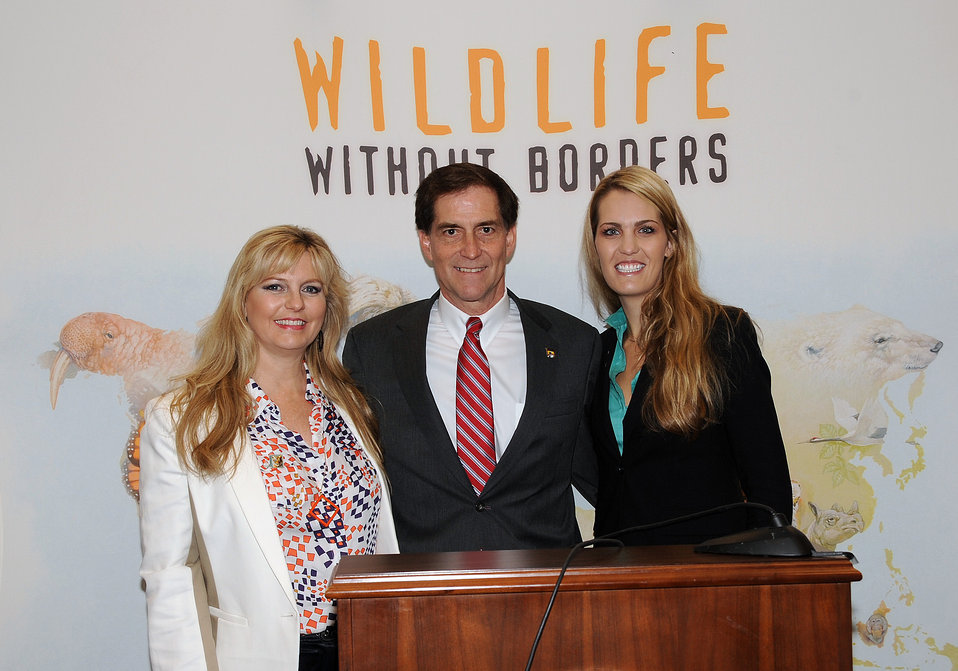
Save Vanishing Species on Capitol Hill

Karie Ross, Dan Ashe, Erica May